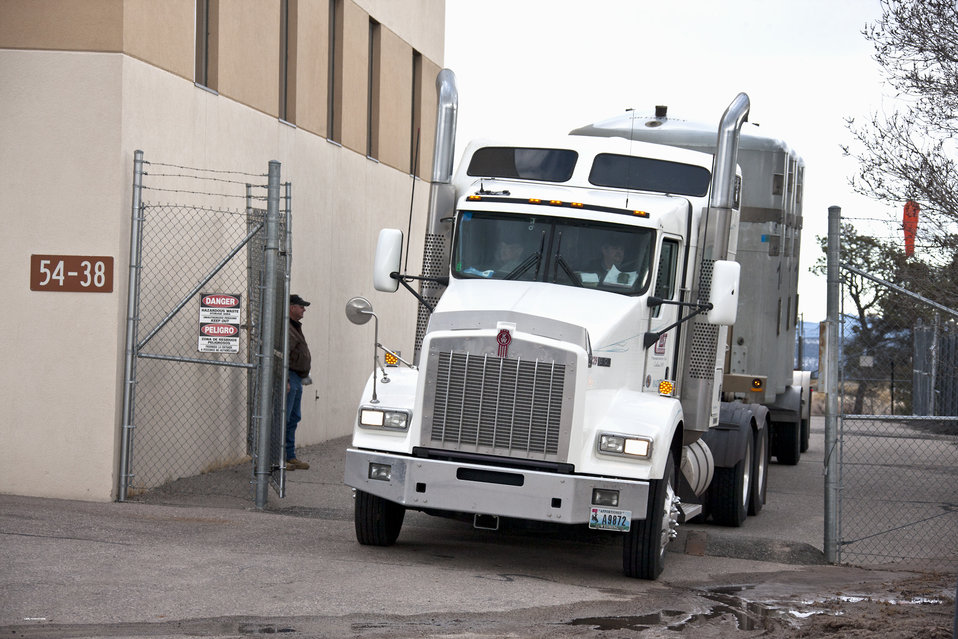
LANL’s TRU Waste Program Exceeds Planned Shipping Goal

LANL’s TRU Waste Program exceeded its planned removal of transuranic waste from Area G in April 2012.

The effort to accelerate removal of transuranic waste stored above ground at Area G was spurred by the Las Conchas Fire in 2011. After the fire, the Department of Energy and the State of New Mexico forged a framework agreement that calls for the removal of 3,706 cubic meters of waste stored above ground at Area G by June 30, 2014.